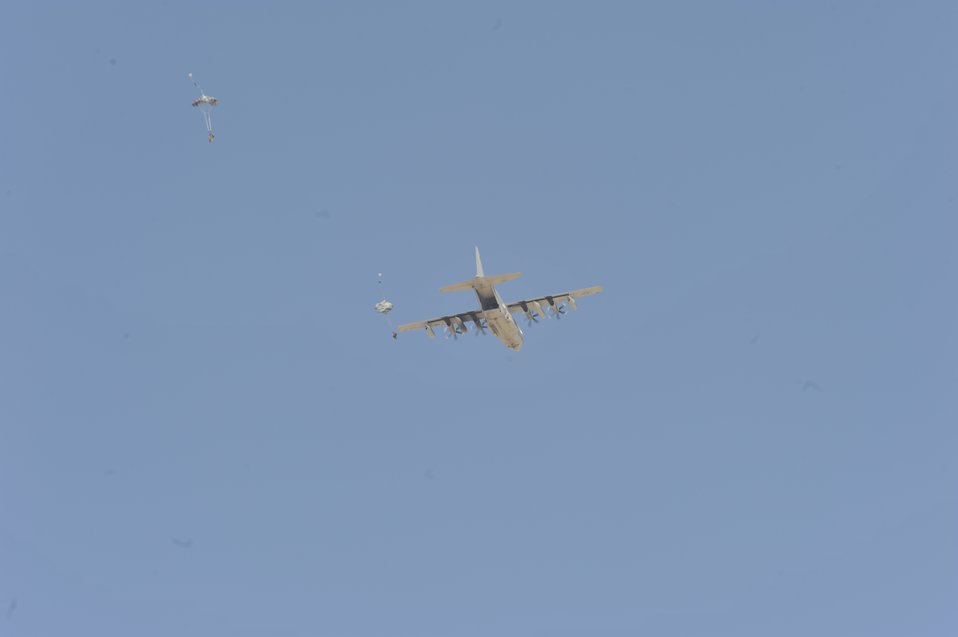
Heroes in training

Pararescuemen with the 82nd Expeditionary Rescue Squadron jump from a U.S. Marine Corps KC-130J during a training mission in the Grand Bara Desert, Djibouti, Oct. 21, 2011.